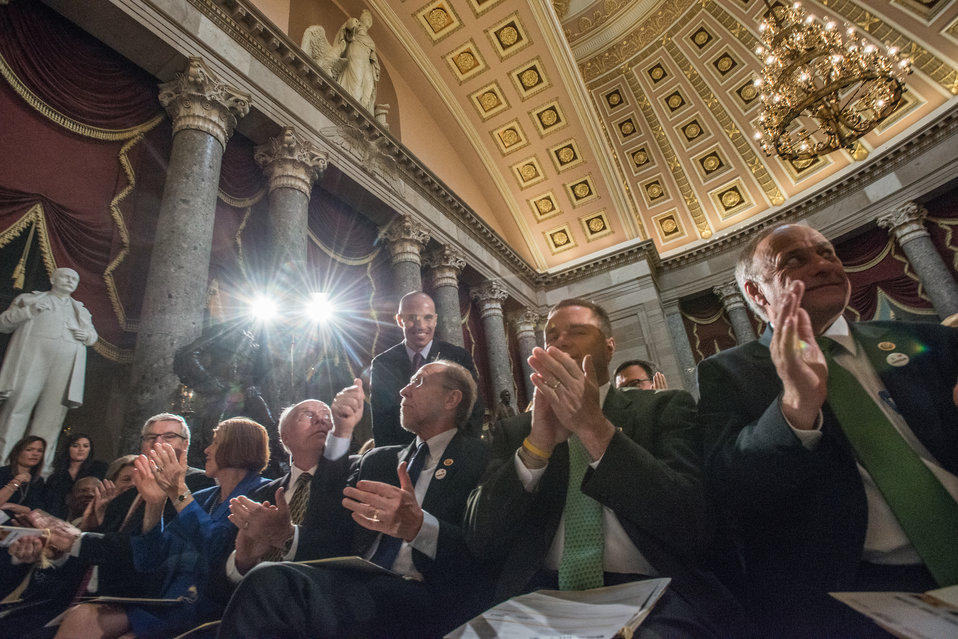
Artist Benjamin Victor is applauded, when Majority Leader of the U.S. Senate Harry Reid thanked him for having sculpted the statue of Norman Borlaug, now part of the collection in the National Statuary Hall of the U. S. Capitol on Tuesday, March 25, 2014. The National Statuary Hall Collection in the U.S. Capitol is composed of statues donated by individual states to honor persons notable in their history.